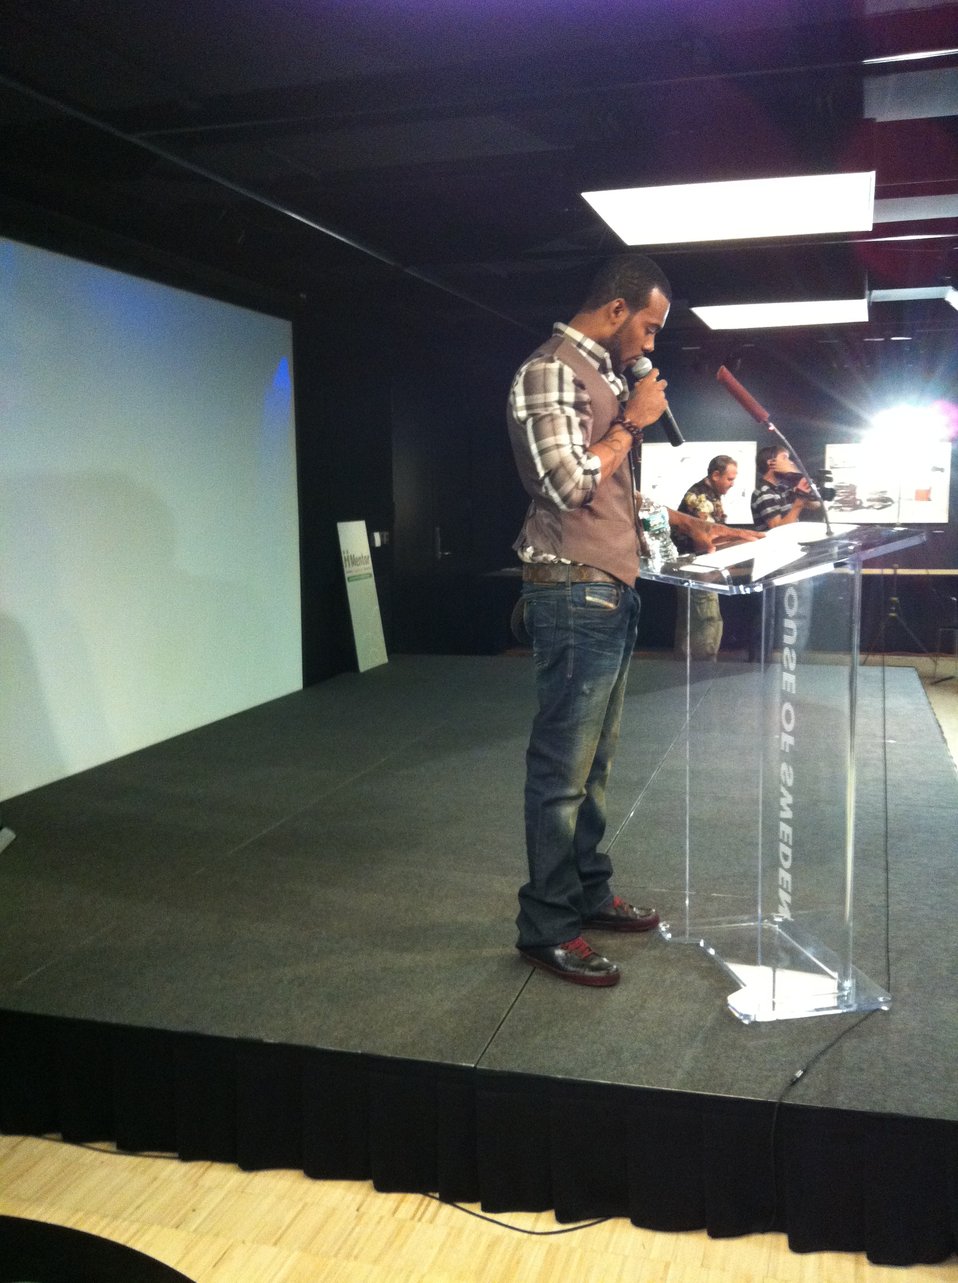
Mentor 12